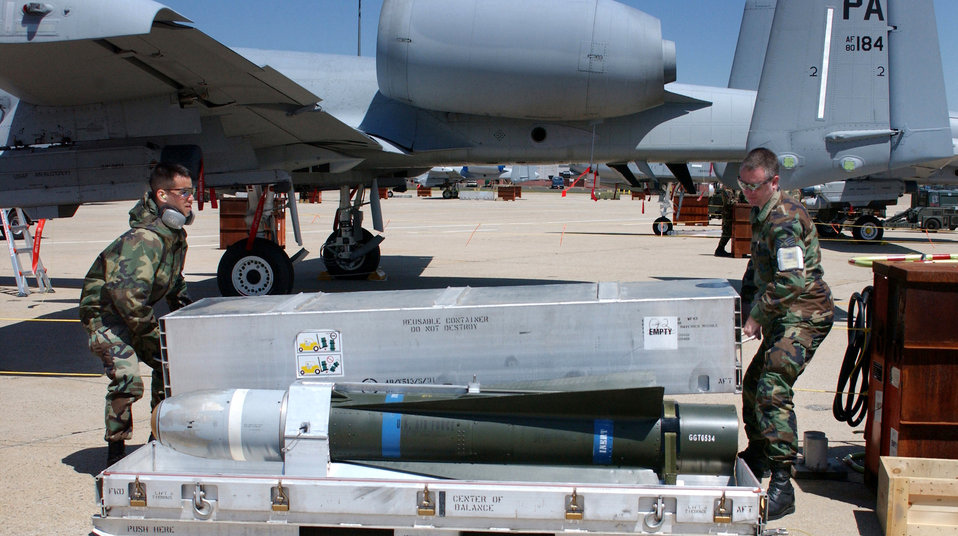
Operation ready

Senior Airman Daniel Bonora (left) and Tech. Sgt. Scott Edsell uncrate an AGM 65 Maverick missile during the first phase of an operational readiness inspection at Willow Grove Air Reserve Station, Pa., on Saturday, April 29, 2006. Airman Bonora and Sergeant Edsell are with the Pennsylvania Air National Guard's 111th Maintenance Squadron.